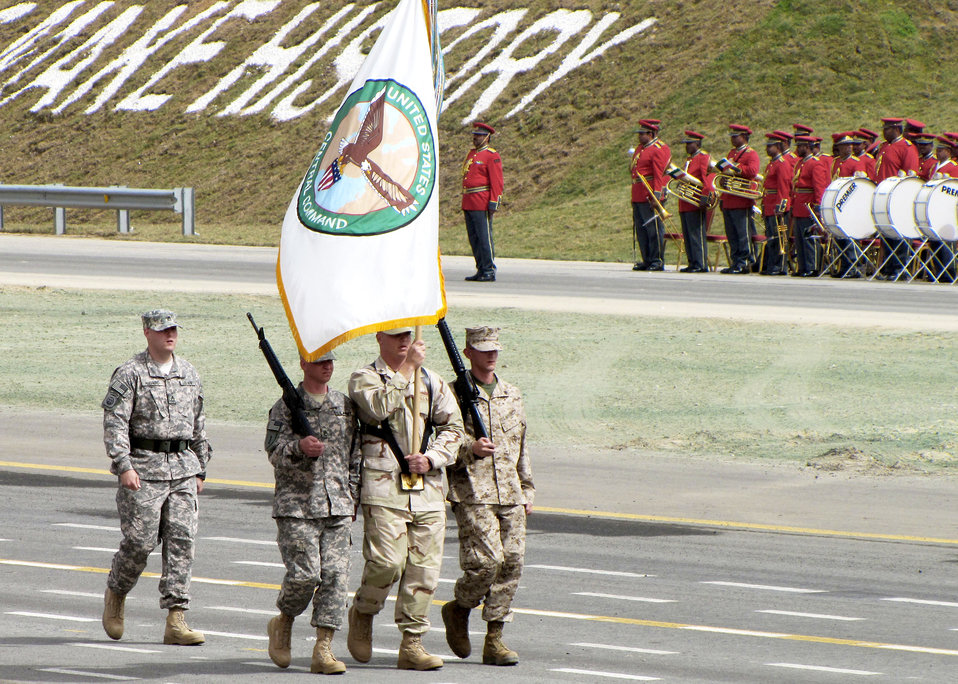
Kuwait celebrates 50/20 anniversary with coalition forces

The U.S. Central Command color guard marches through the Kuwait 50/20 celebration parade Feb. 26, 2011. The event celebrated Kuwait's 20th year of liberation from invading forces from Iraq and its 50th year of independence from Great Britain.